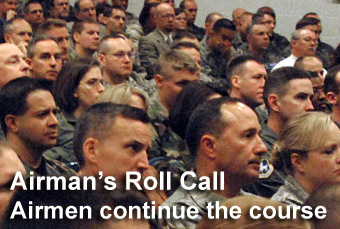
Airman's Roll Call: Leadership changes, continuing the course

The Department of Defense and the Air Force are committed to putting the right leaders in the right positions to ensure continued focus on the mission. Airmen are encouraged to keep faith in yourself, fellow Airmen, leadership and your Air Force.